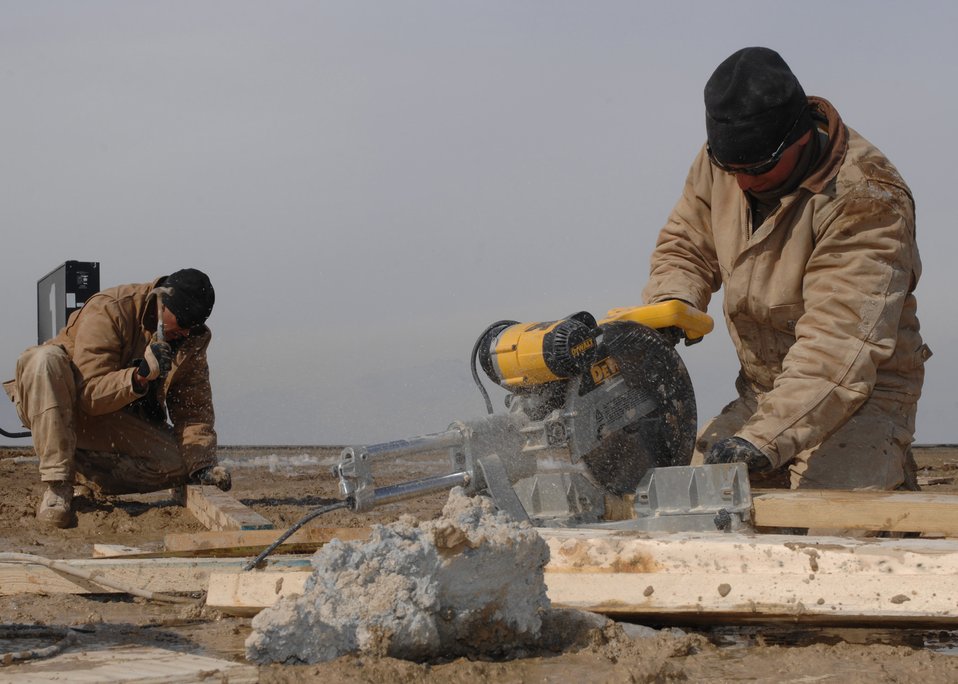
RED HORSE team improves flightline operations

Staff Sgt. Levesque Lucas cuts wood with a saw while Senior Airman Jeffrey Ratliff hammers wood to be used during the construction of a barrier arresting kit on the flightline at Bagram Air Base, Afghanistan, Feb. 13. Sergeant Levesque is from 819th RED HORSE Squadron, Malmstrom Air Force Base, Mont. and is deployed to 1st Expeditionary RED HORSE Group as a structural craftsman. Airman Ratliff is also from the 819th RED HORSE Squadron, Malmstrom AFB, Mont. and is deployed to 1st Expeditionary RED HORSE Group as a structural journeyman.